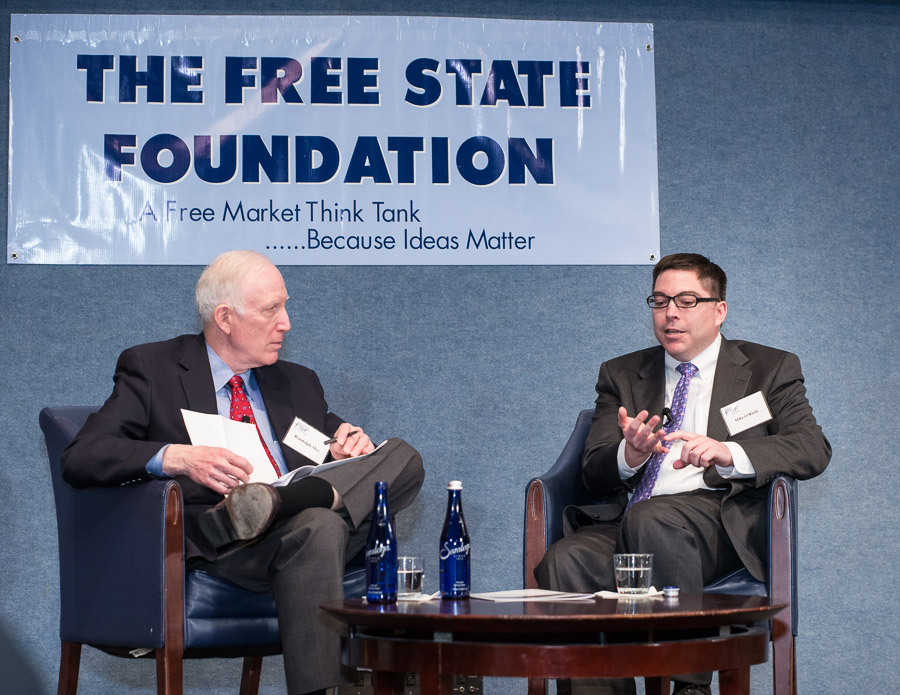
3.18.2014 Free State Foundation

FCC Commissioner Michael O'Rielly & Randolph May, President of The Free State Foundation.